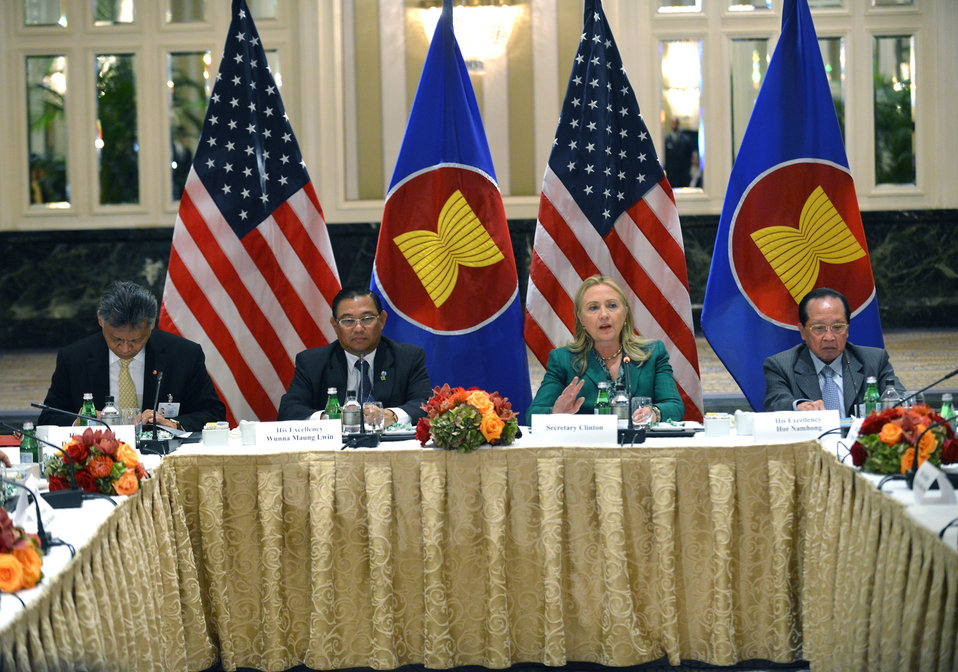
Secretary Clinton Delivers Remarks at a ASEAN Ministerial Meeting

U.S. Secretary of State Hillary Rodham Clinton delivers remarks at a ASEAN Ministerial Meeting in New York, New York on September 27, 2012.